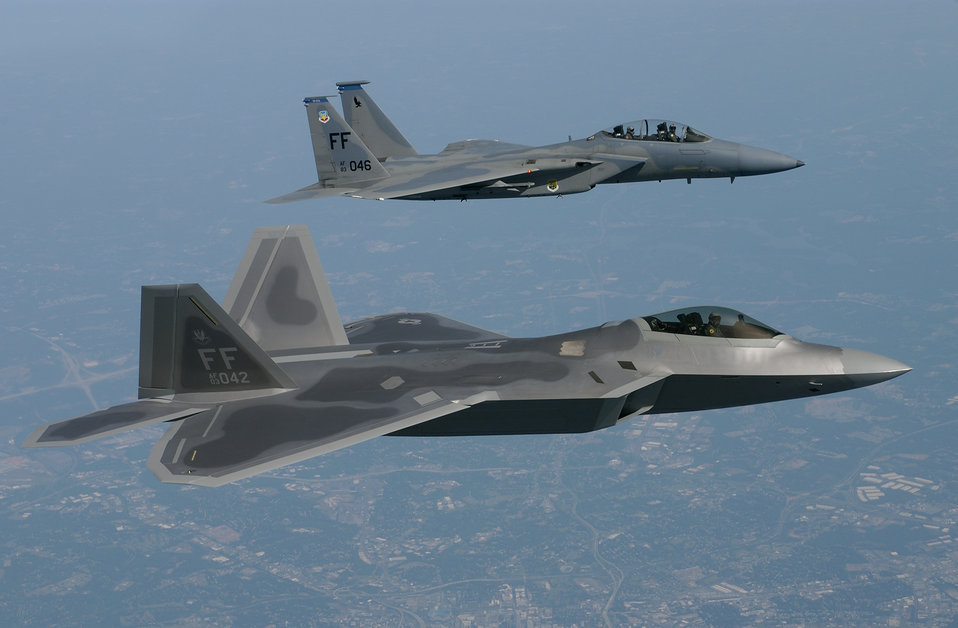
Special delivery

OVER VIRGINIA -- Lt. Col. James Hecker (foreground) delivers the first operational F/A-22 Raptor to its permanent home at Langley Air Force Base, Va., on May 12. This is the first of 26 Raptors to be delivered to the 27th Fighter Squadron. The Raptor program is managed by the F/A-22 System Program Office at Wright-Patterson AFB, Ohio. Colonel Hecker is the squadron's commander.